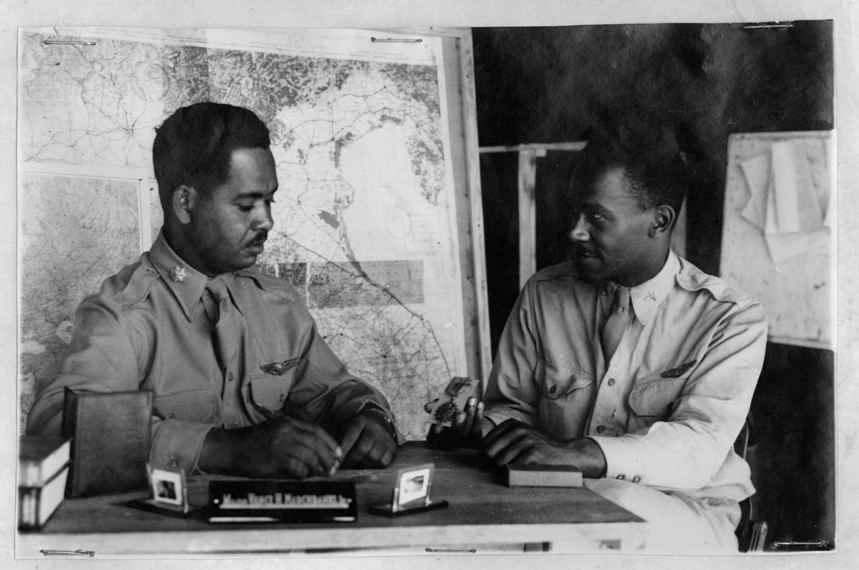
Col. (Dr.) Vance H. Marchbanks Jr.

Maj. Vance H. Marchbanks Jr. interviewing 1st Lt. Felix J. Kirkpatrick